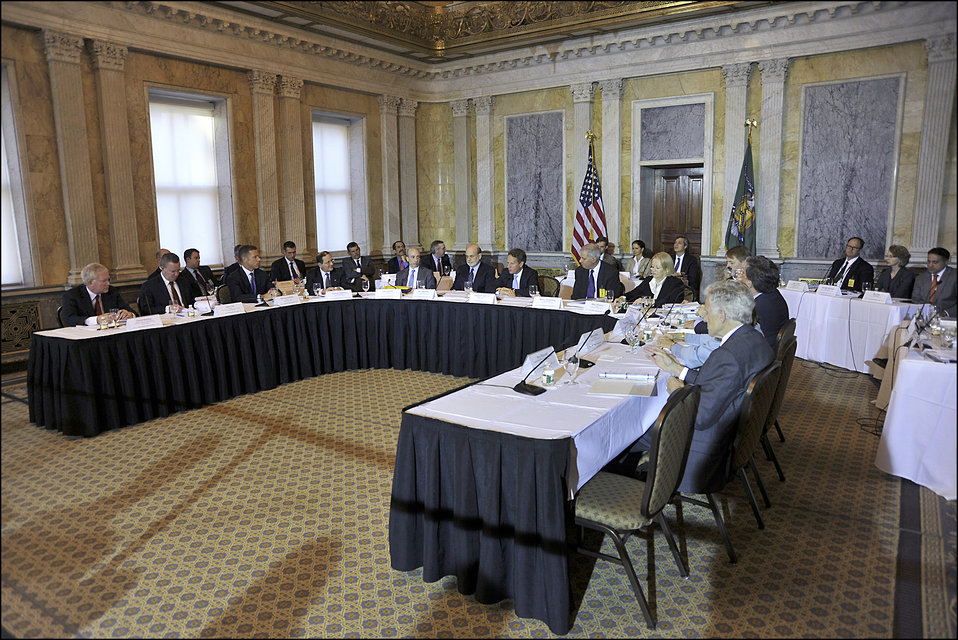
Open session meeting of the Financial Stability Oversight Council

On November 13, 2012, the Financial Stability Oversight Council convened to vote on proposed recommendations for reform of money market mutual funds.